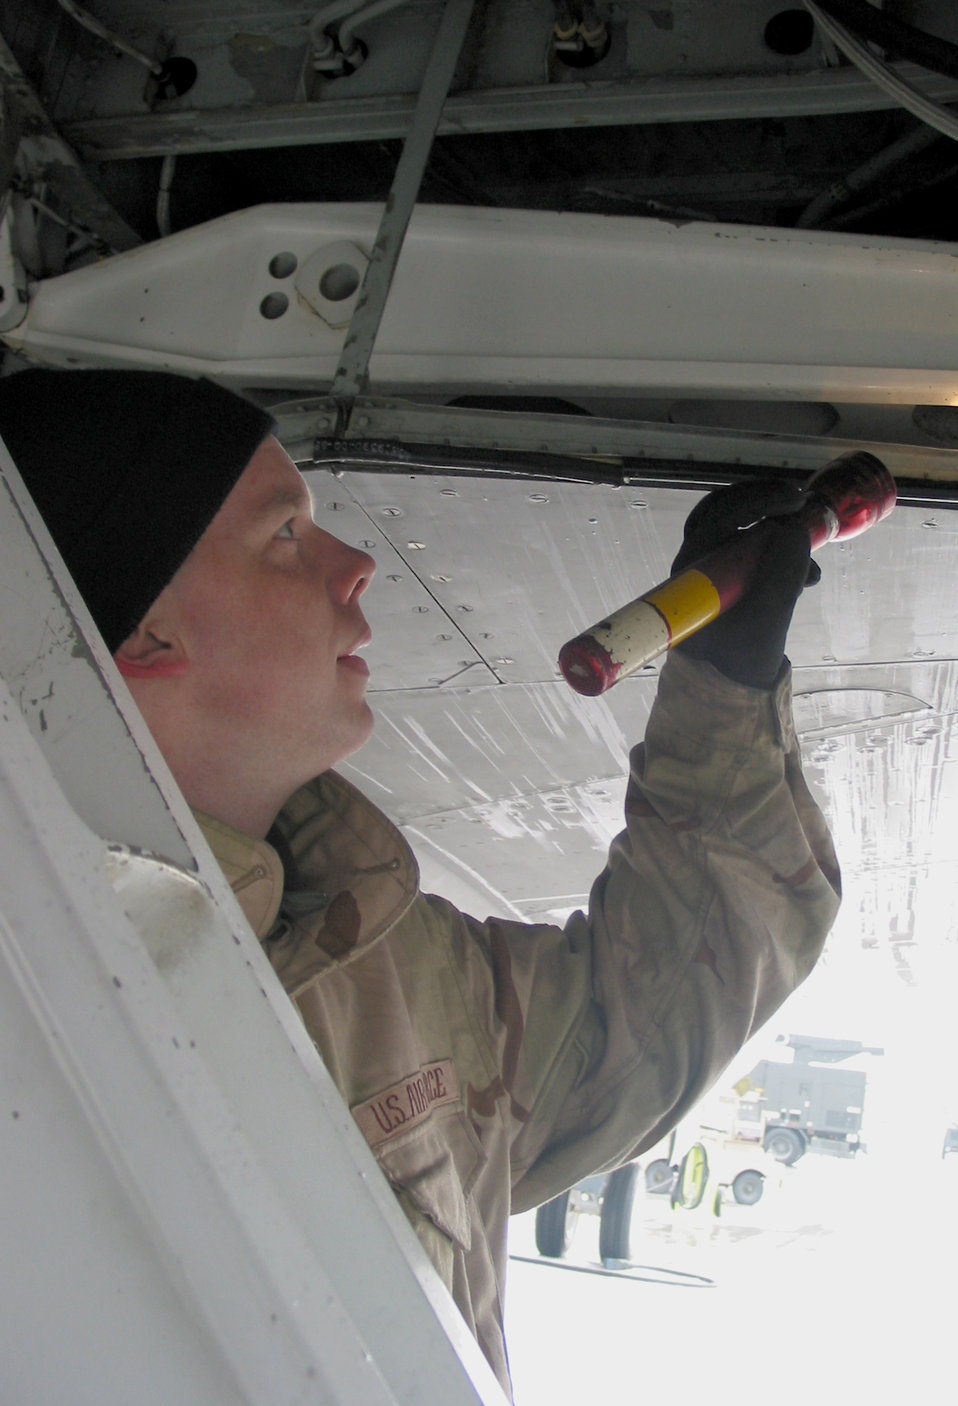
Good to go

MANAS AIR BASE, Kyrgyzstan -- Staff Sgt. Charles Swartwood inspects the wheel well of a KC-135 Stratotanker before flight. The tanker's primary mission here is to supply fuel to the fighters and bombers providing close-air support to the soldiers on the ground in Afghanistan. Sergeant Swartwood is a crew chief with the 376th Expeditionary Maintenance Squadron.